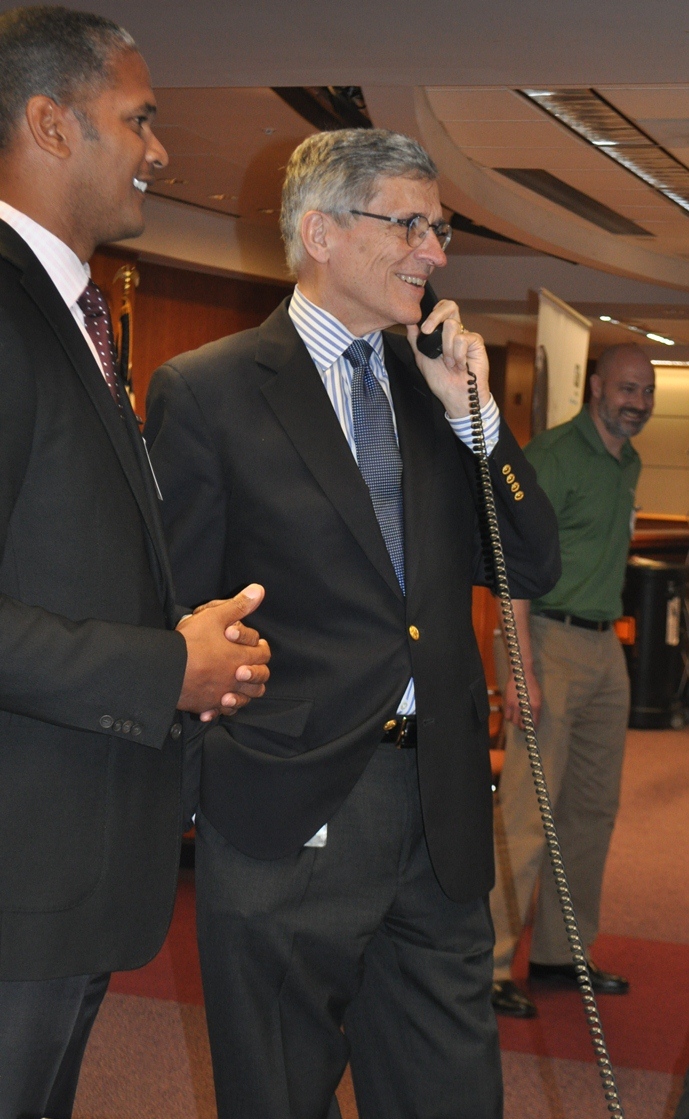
5.14.2014 Satellite Technology Demonstration

Chairman Tom Wheeler at the Satellite Technology Demonstration